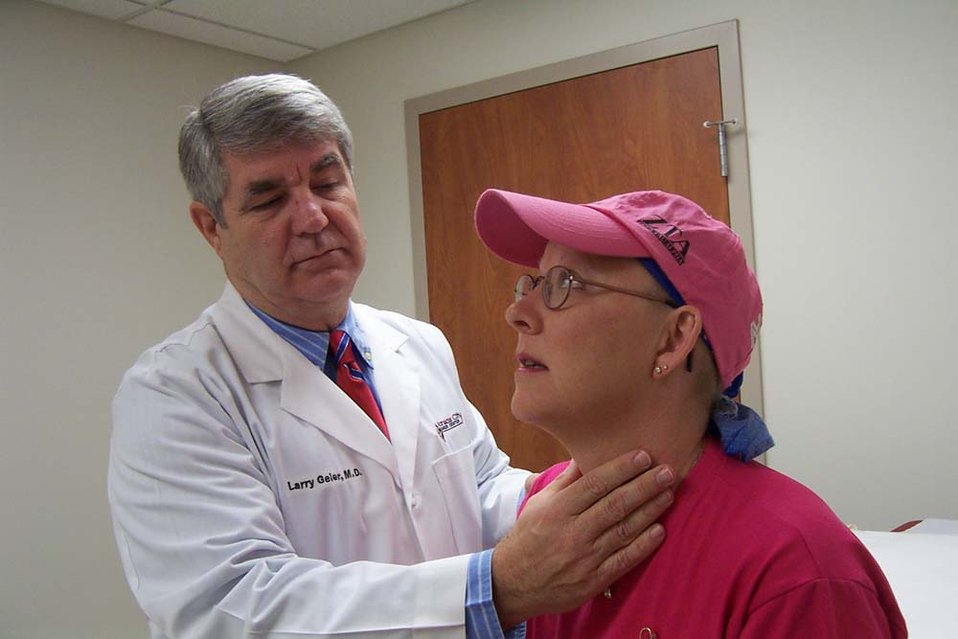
Airmen fight cancer, build support group

WHITEMAN AIR FORCE BASE, Mo. -- Dr. Larry Geier examines Master Sgt. Dee Ann Poole, who is battling breast cancer. Sergeant Poole started a cancer support group here and is assigned to the 509th Bomb Wing public affairs office.